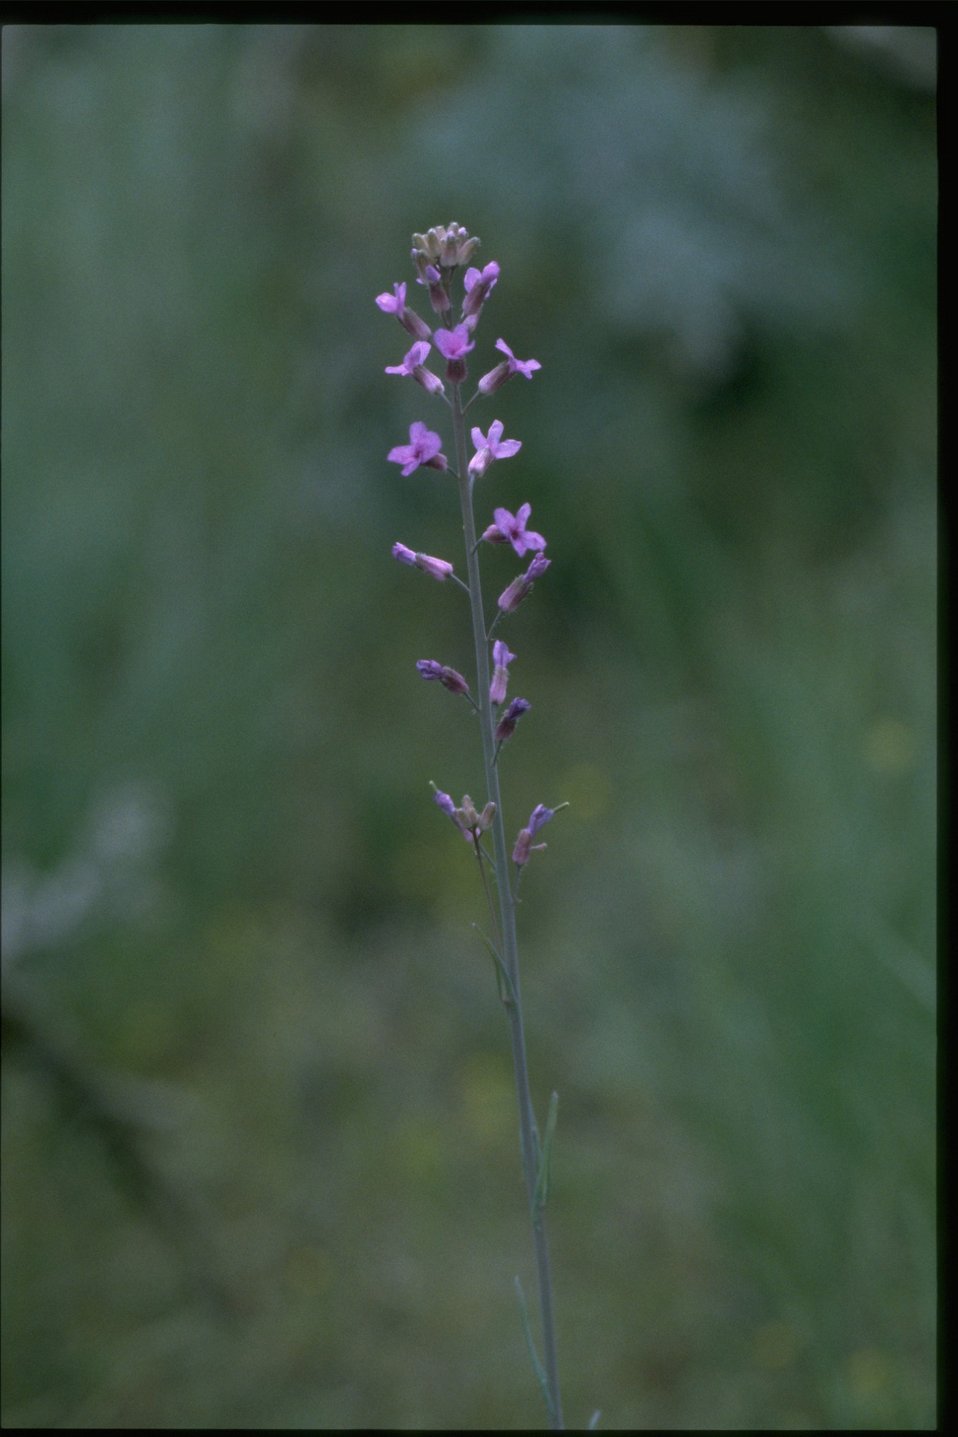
Medium shot of Penstemon wildflower.